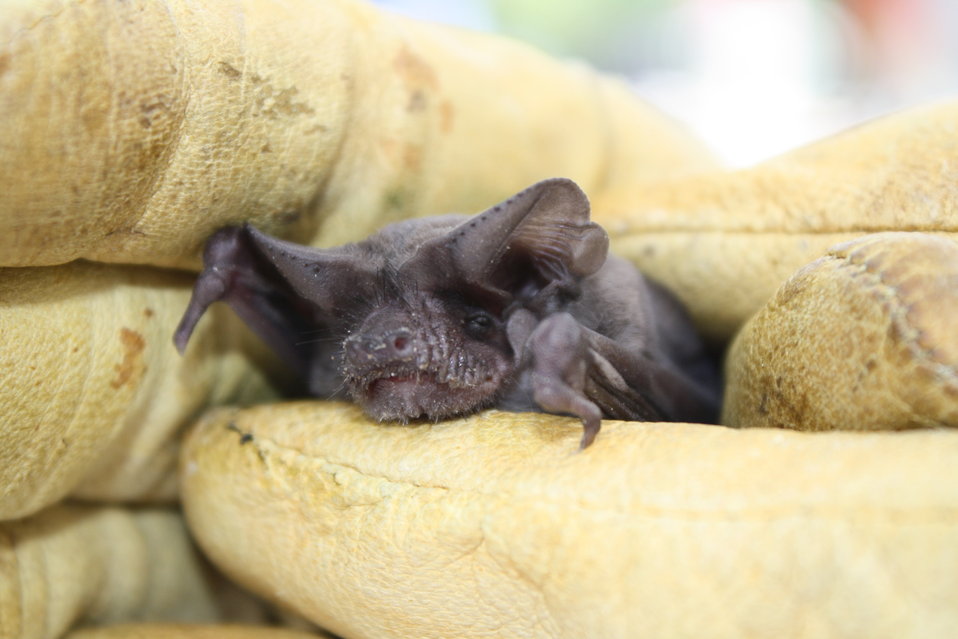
Mexican free-tailed bat (Tadaria brasiliensis)